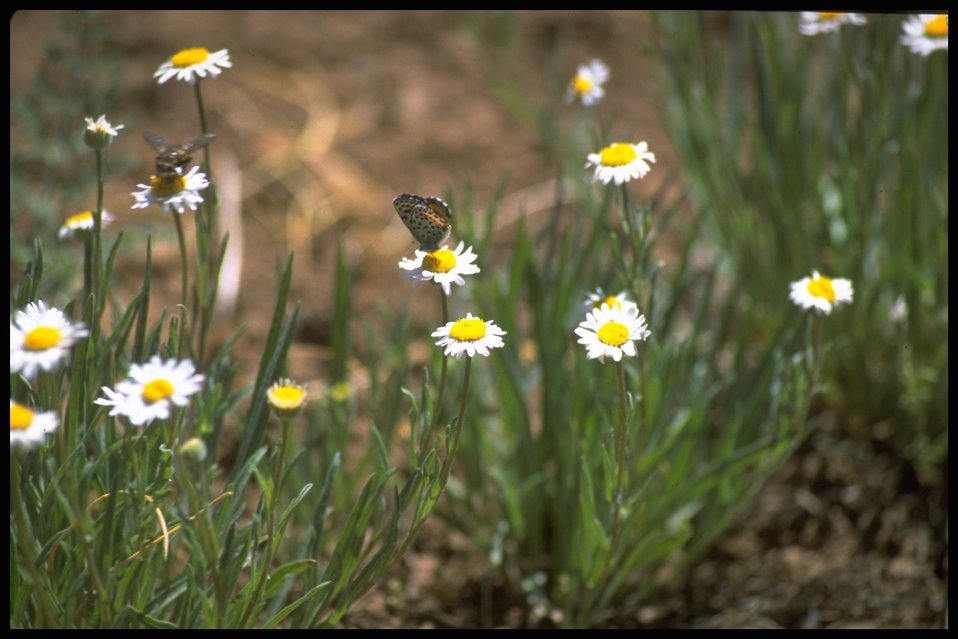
Medium shot of Flea Bane wildflowers, Lakeview District.